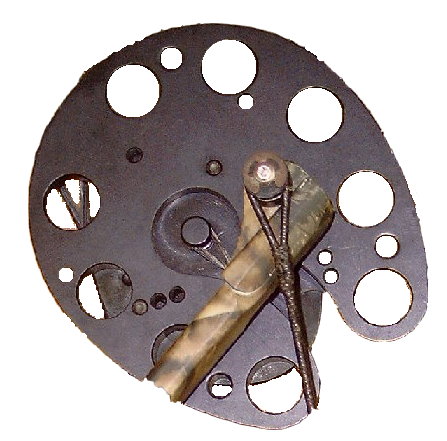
Deutsch: Cam eines Compoundbogens